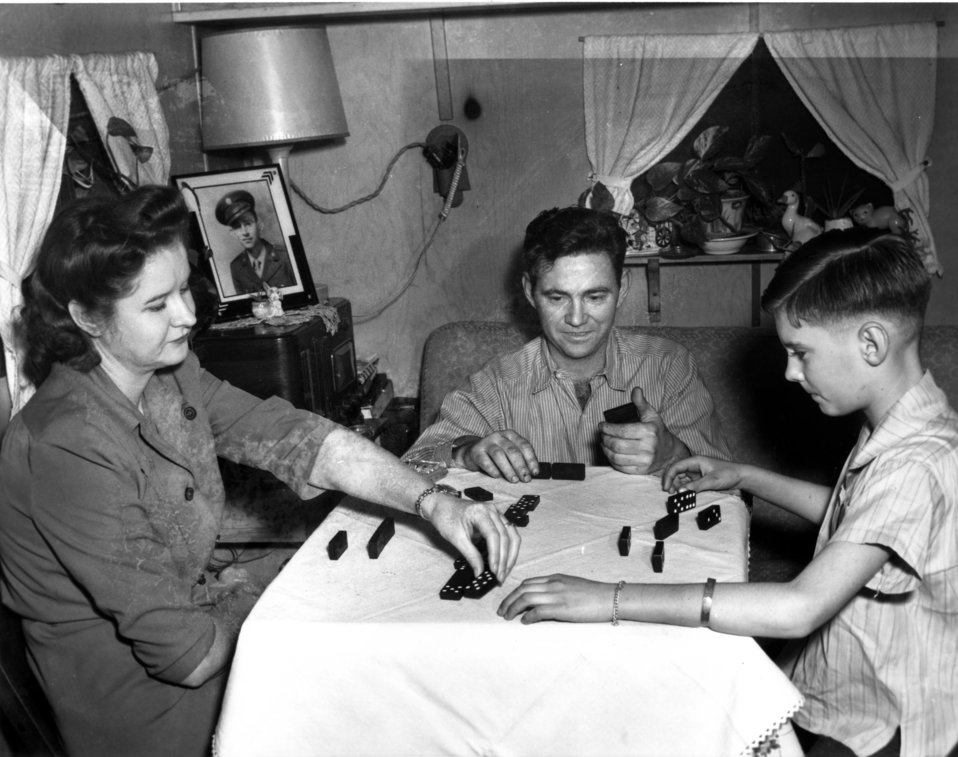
Daily Life at Oak Ridge